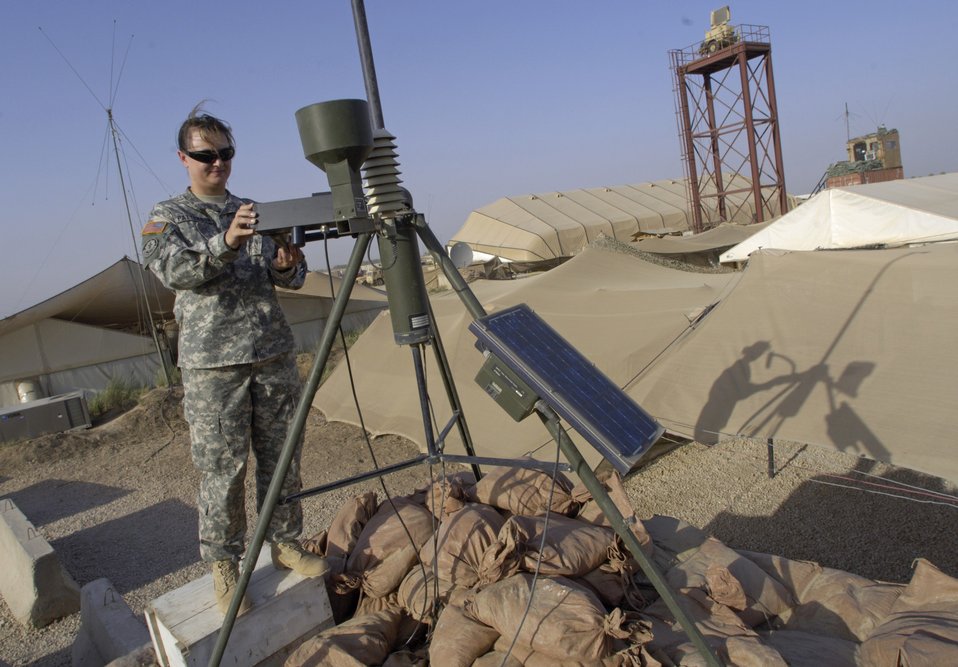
Weather team acclimates to mission in southern Baghdad

Tech. Sgt. Andrea Patterson performs her daily maintenance routine on a tactical meteorological operating system June 23 at Forward Operating Base Kalsu, Iraq. Sergeant Patterson and two other Air Force weather forecasters provide 24-hour-a-day weather updates to the Army 3rd Infantry Division's operations occurring in the Triangle of Death area. The instantaneous weather information the battlefield weathermen are able to provide are critical to the success, and to the safety of the 3rd ID's ground and aviation operations. Though Sergeant Patterson is attached to the 3rd ID, she officially falls under the recently formed 3rd Expeditionary Weather Squadron headquartered on Camp Victory in Iraq. She is deployed from Detachment 6 of the 7th Weather Squadron from Wiesbaden, Germany.